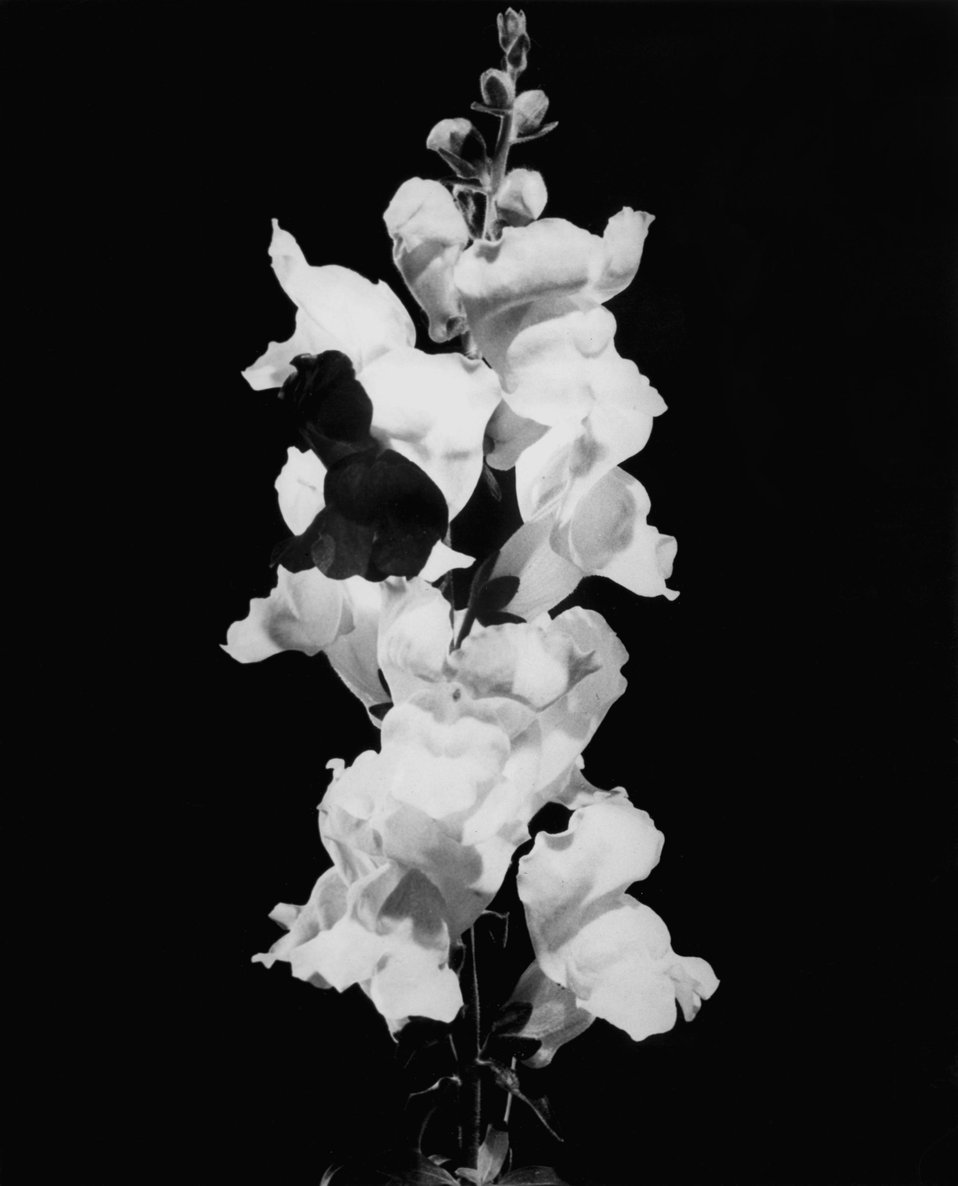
The radiation-induced mutant of a plant shows a spontaneous reversion to the normal flower coloration, after several generation of asexual propagation from the original plants. c. 1962